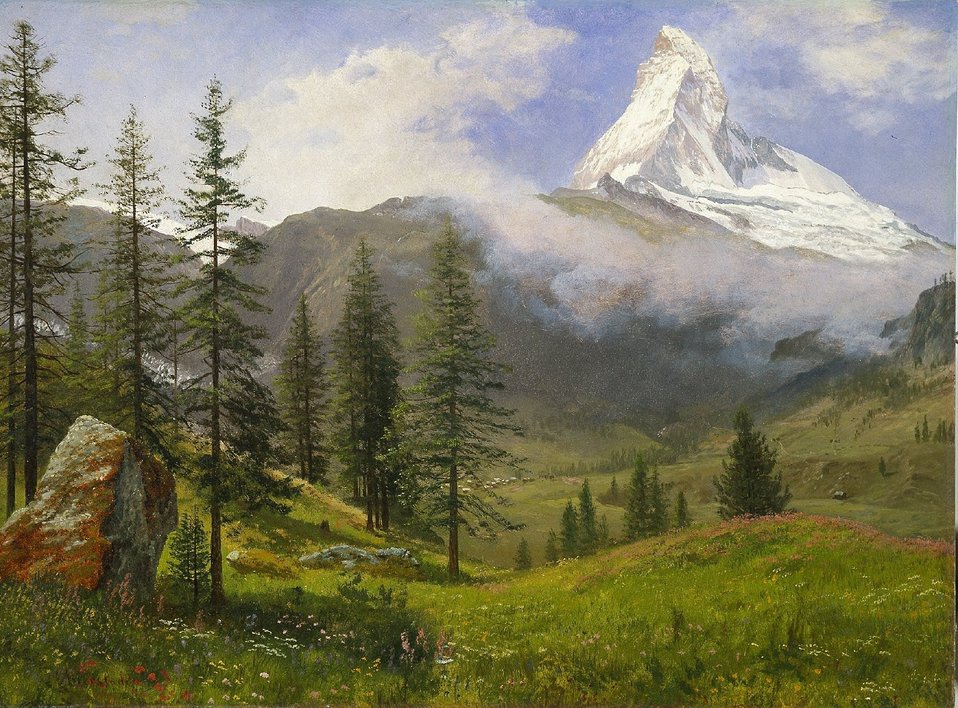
Albert Bierstadt - Matterhorn